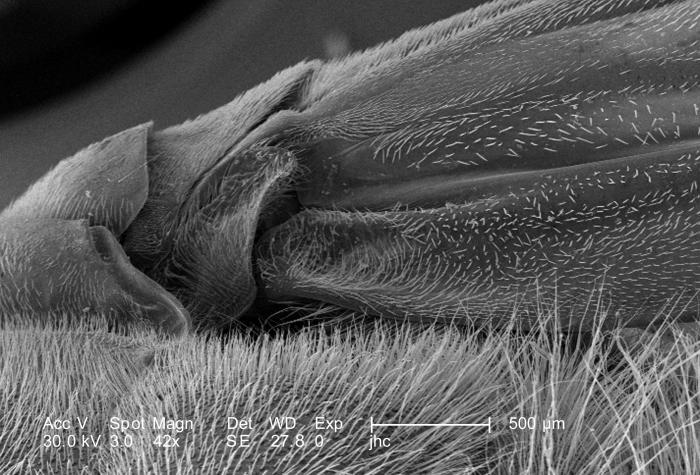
Under a magnification of 42X, this scanning electron micrograph (SEM) depicted the exoskeletal region where this unidentified hornet's right forewing was attached to its thorax. This insect was discovered in the suburbs of Decatur, Georgia. This hornet was a member of the Phylum Arthropoda, i.e., Arthro = jointed, and poda = legs, and the class Insecta, for it possessed three pairs of these jointed extremities. Note the hair-like 'setae', seen here adorning the insect's thorax and membranous wings, which provided the hornet with data indicative of changes encountered in its environment such as chemical, thermal, and tactile queues.